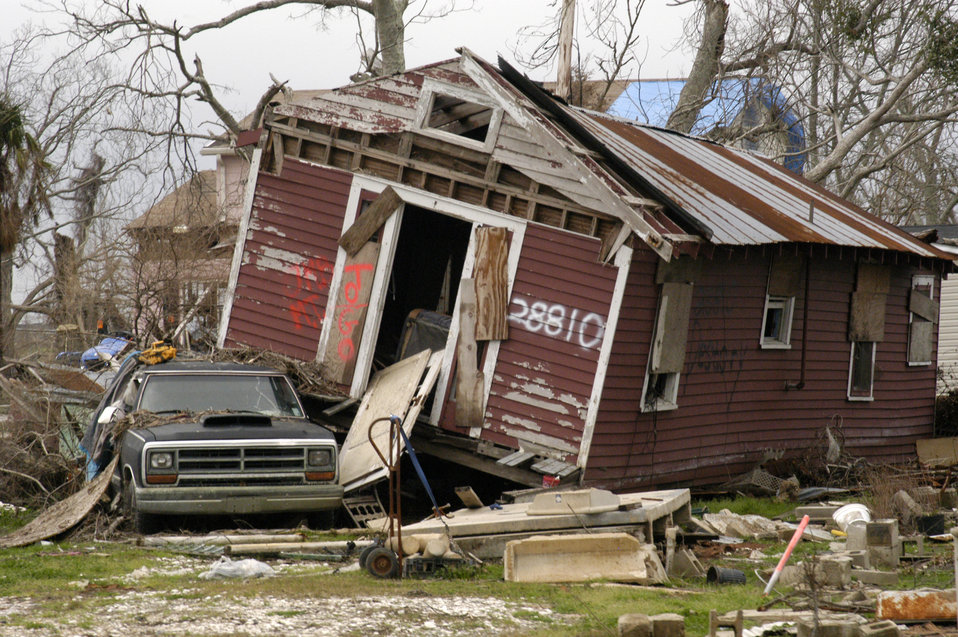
Thousands of homes were destroyed in Plaquemines Parish, LA, by Hurricane Katrina. Katrina made landfall on Monday morning, August 29, 2005 as a Category 3 hurricane with sustained winds of 125 mph with over a 20-foot storm surge. Katrina caused catastrophic damage over 90 thousand square miles across Louisiana with an estimated $75 billion dollars in damage. The total economic impact to the Gulf Coast was estimated at over $150 billion. 80% of New Orleans, LA, was underwater with some areas more than 20 feet deep. Less than a month later southern Louisiana was struck by a second Category 3 hurricane Rita inflicting more damage in the southwestern areas of Louisiana adding an addition $12 billion worth of damage to the already beleaguered state. The U.S. Army Corps of Engineers (USACE) under the auspices of Federal Emergency Management Agency (FEMA) was the lead service in providing assistance to the citizens of Louisiana. The U.S. Department of Agriculture (USDA) supplied emergency food aid, emergency loan assistance to farmers and home owners, and USDA personnel from around the nation volunteered their time and muscle to aid in the recovery operations.